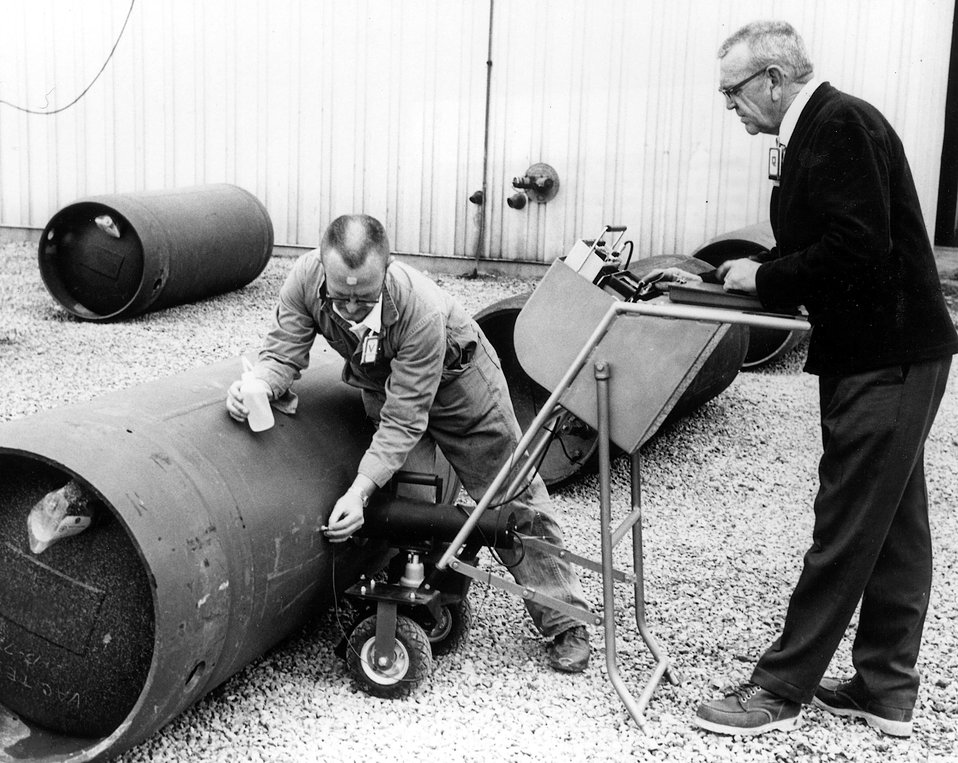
ENRICHMENT METER...Measurement of the uranium enrichment in 2.5-ton cylinders of uranium hexaflouride (UF6) product from the AEC's Oak Ridge and Portsmouth Gaseous Diffusion Plants is done with a portable 'enrichment meter.' Circa 1974.